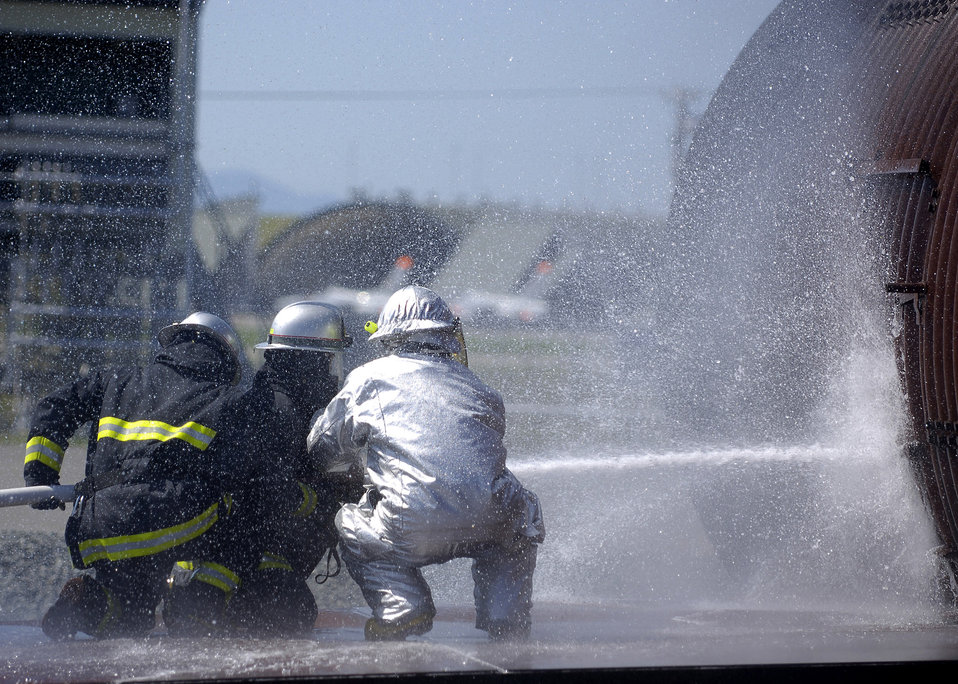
Fightin' fires

Shuji Imota instructs Towada City firefighters on how to extinguish a burning aircraft during a simulated crash at Misawa Air Base, Japan, Sept. 10. The training was conducted in order to acquaint Towada City firefighters with Air Force fire-fighting procedures. Mr. Imota is a 35th Civil Engineer Squadron firefighter crew chief.